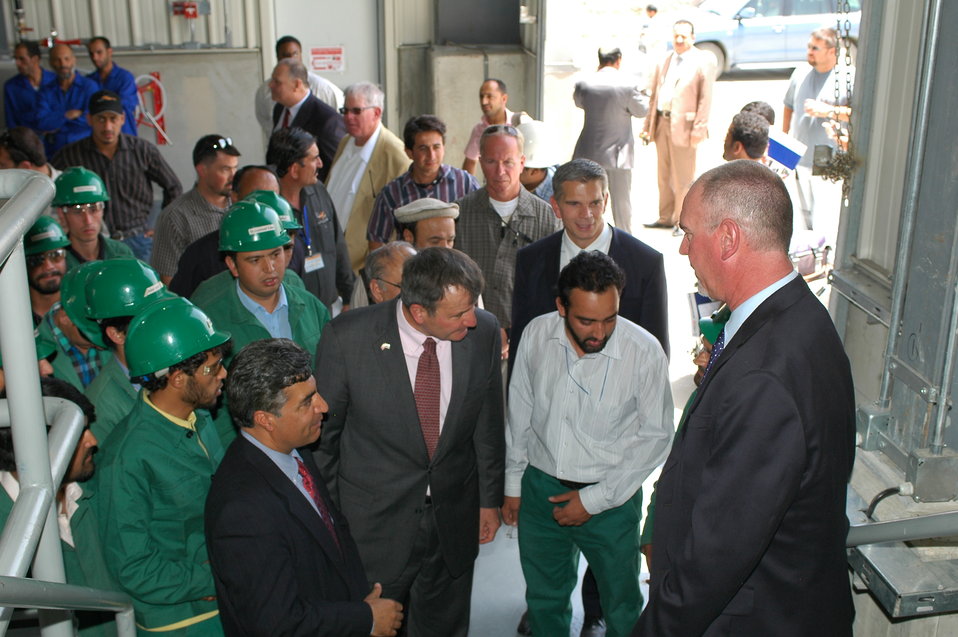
105 MW Tarakhil Power Plant Handover